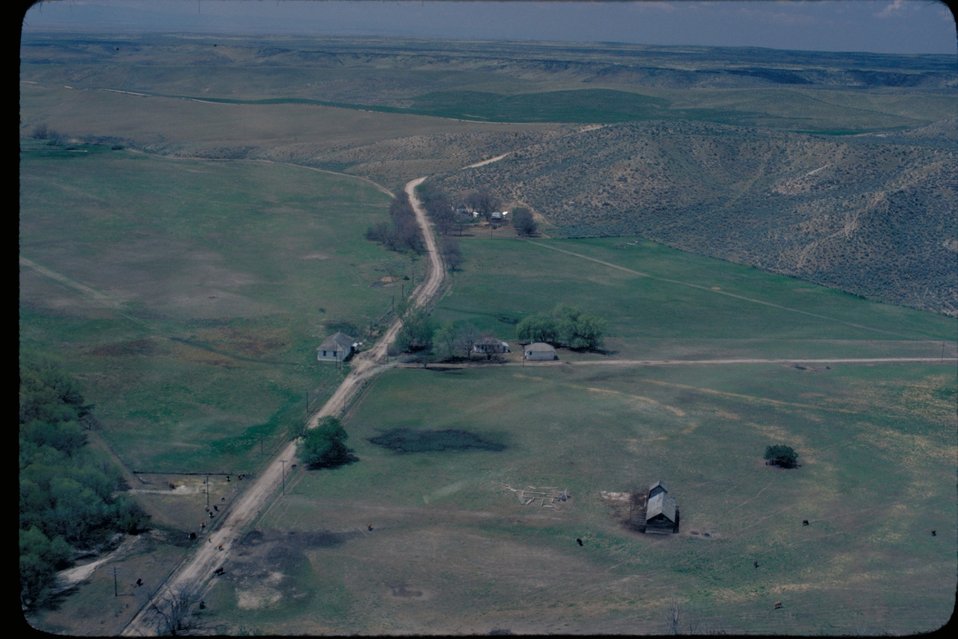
Oregon Trail Mayfield Lower Snake River District